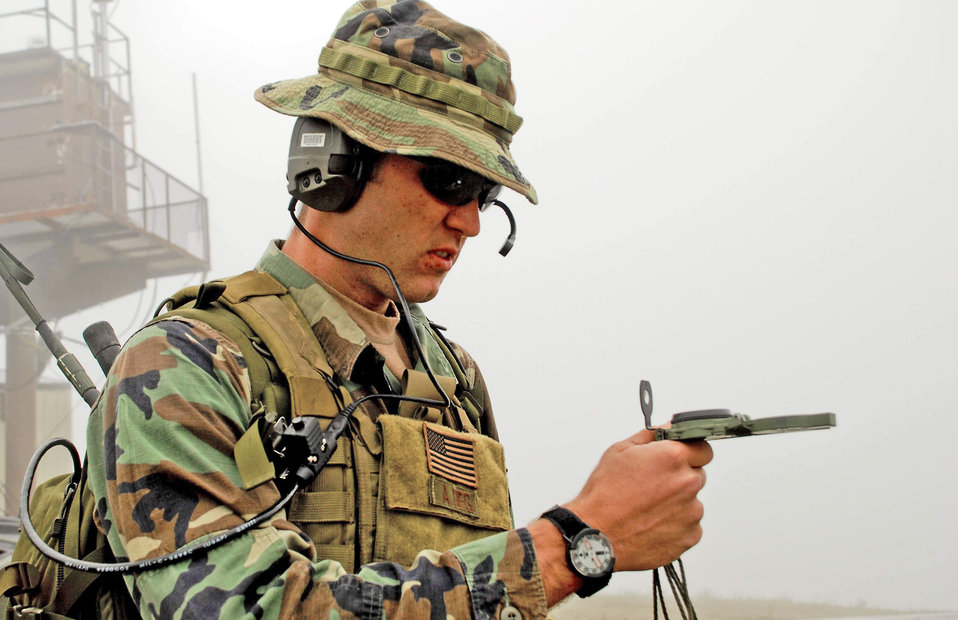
Combat controllers support Northern Edge 09

An Air Force combat controller from the 320th Special Tactics Squadron based at Kadena Air Base, Japan, uses a compass to help direct pilots to their correct targets. During this mission June 23, several combat controllers called in airstrikes on Fort Wainwright's Range 2205 in Alaska. The training mission was part of Northern Edge 2009, an exercise designed to prepare joint forces to respond to crises in the Asian Pacific region.